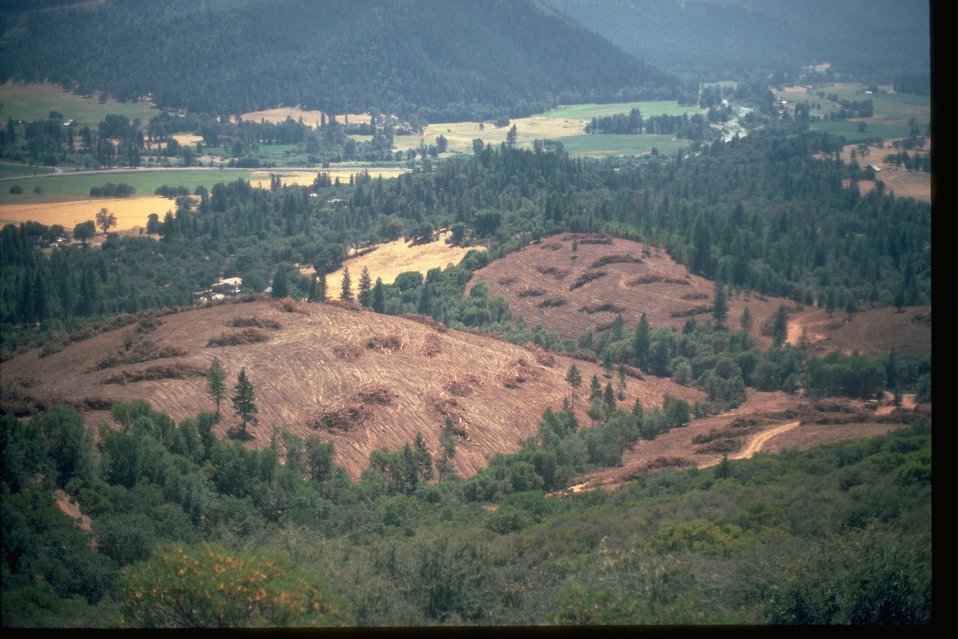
Brushfield Conversion